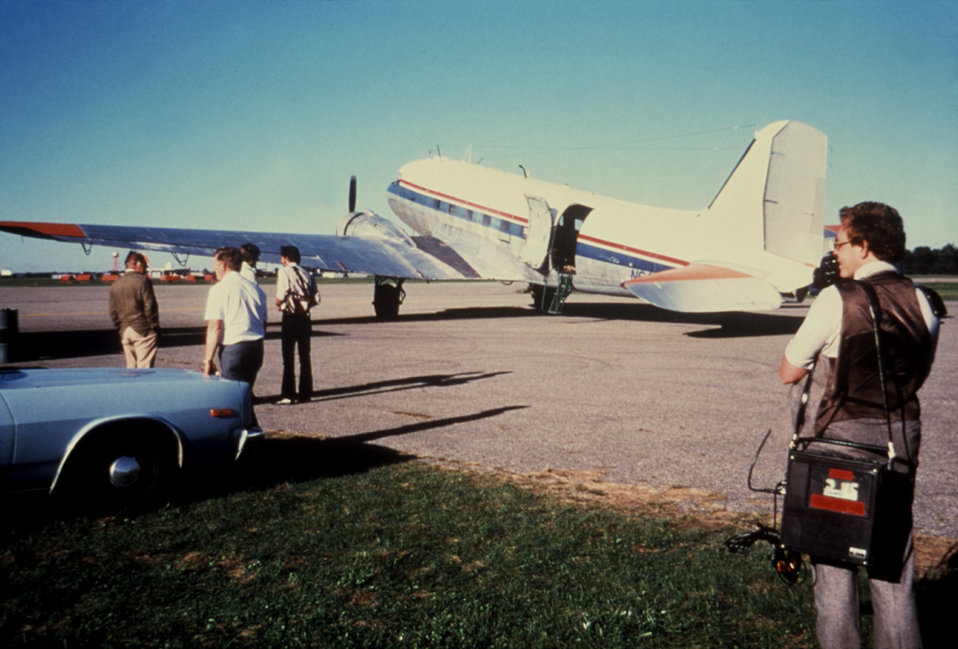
This 1980 photograph depicts a DC-3 aircraft used in the dispersal of ultra-low volume (ULV) Malathion insecticidal fog in order to control populations of potential insect disease vectors.